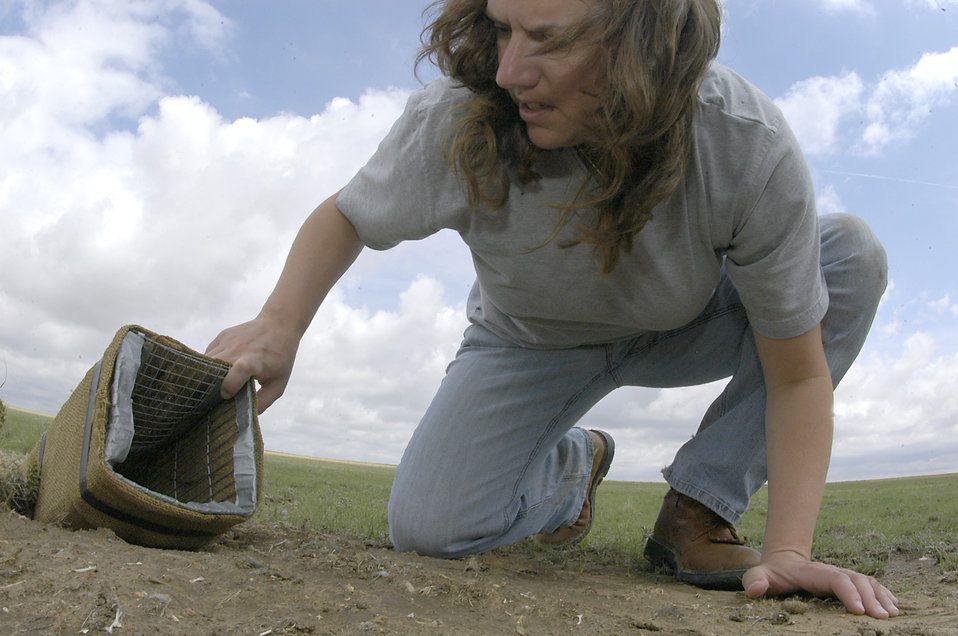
Schriever AFB home to rare burrowing owls

Melissa Trenchik checks a trap for baby owls at Schriever Air Force Base, Colo. The traps are designed to trap owls without harming them and were used for a U.S. Geological Survey-University of Arizona study. Mrs. Trenchik is a member of the 50th Civil Engineer Squadron Environmental Flight.